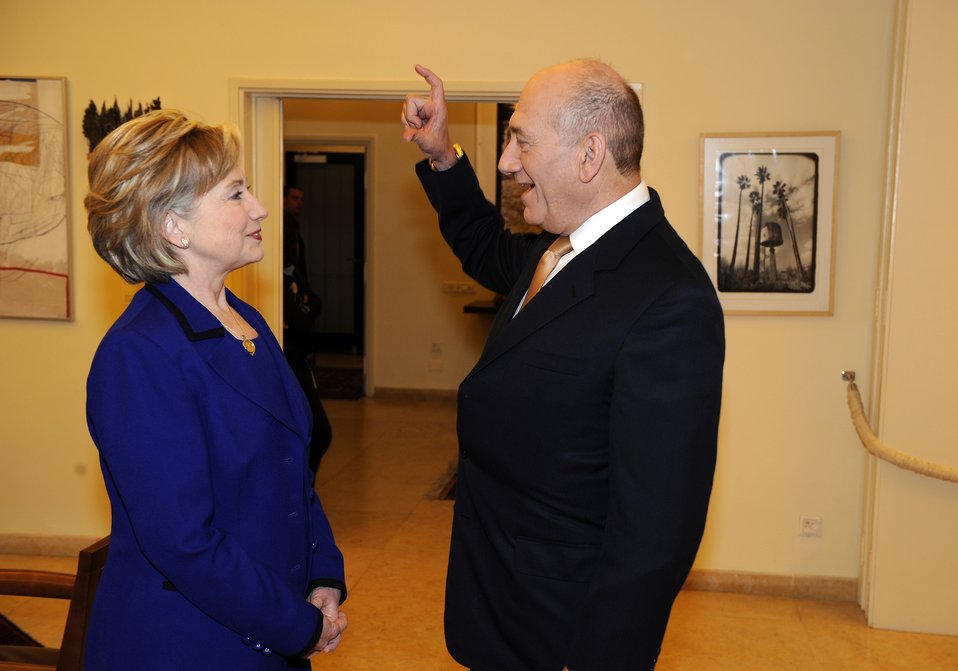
Secretary Clinton Visits Israeli Prime Minister Residence

U.S. Secretary of State Hillary Rodham Clinton during visit to Prime Minister Ehud Olmert's Residence, Jerusalem, March 3, 2009.